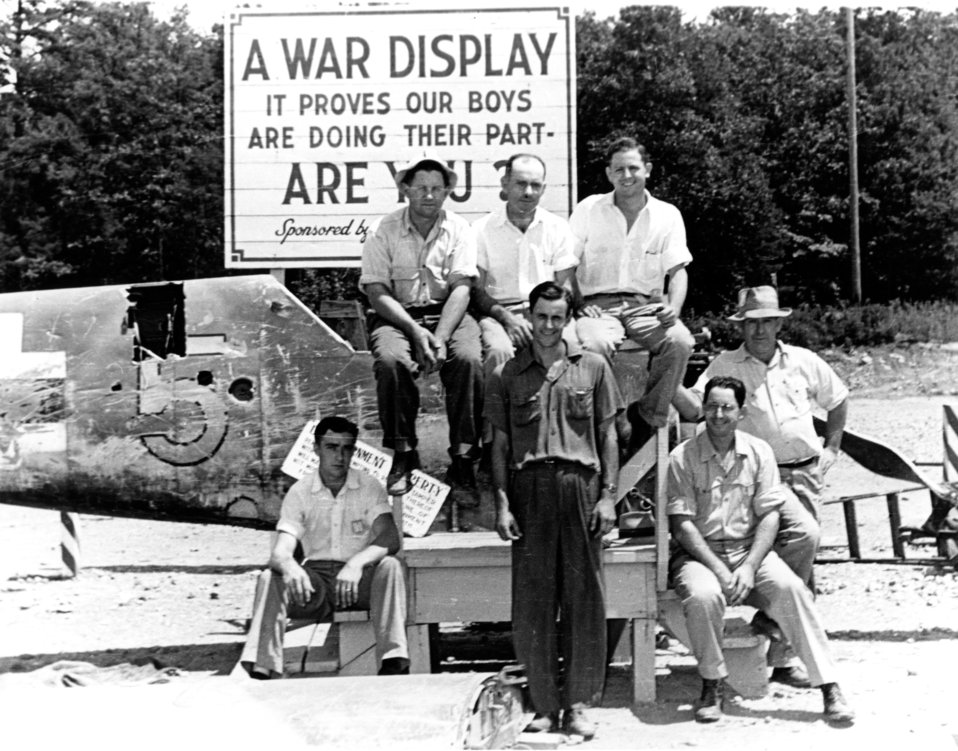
Army Activity at Oak Ridge